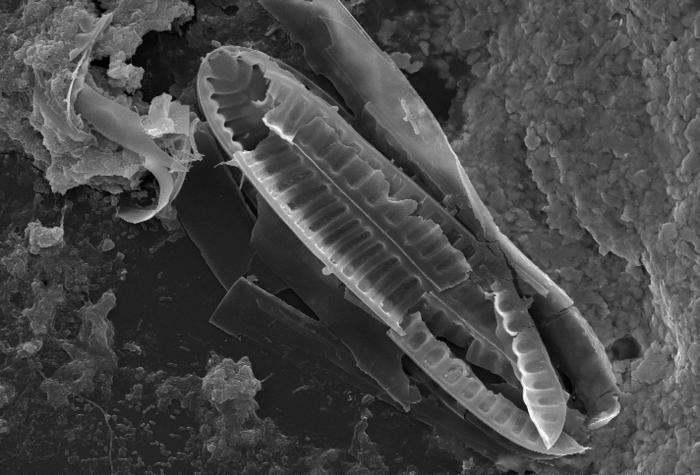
This scanning electron micrograph (SEM) of an untreated water specimen extracted from a wild stream mainly used to control flooding during inclement weather, revealed the presence of unidentified organisms, which included bacteria, protozoa, and algae. In this particular view, it appears that a diatom had been fractured in the processing of this specimen. Surrounding this diatomic microorganism, was a large biofilm mass within, and around which were numerous protozoan amoeboid and bacterial microorganisms. See PHIL 11686 for a larger view of this diatom. For a colorized version of this image see PHIL 11701.